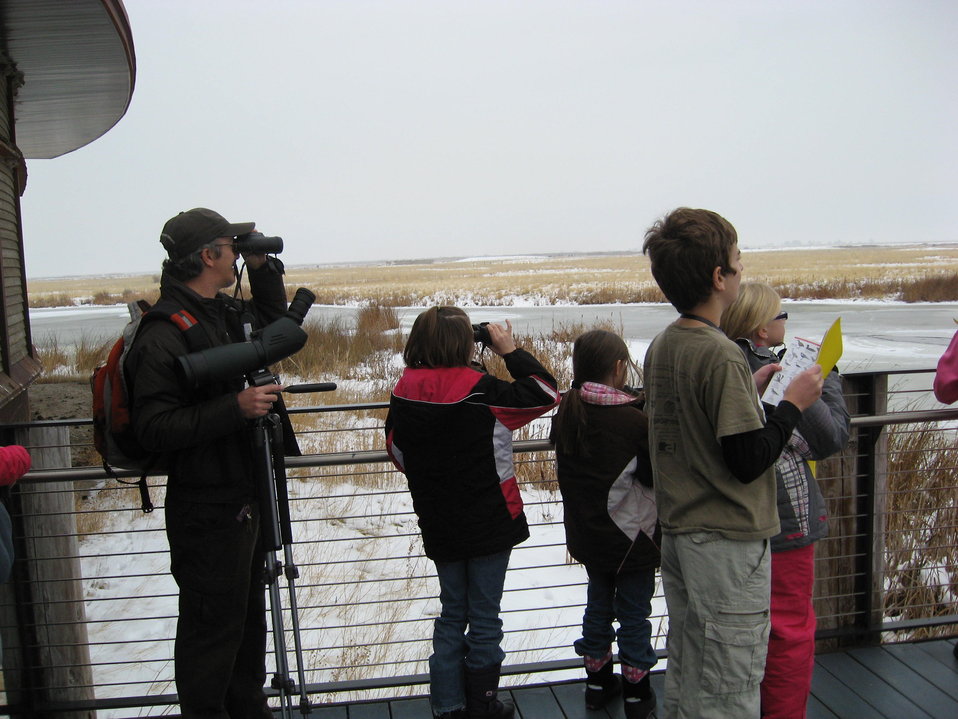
Getting a Closer Look

Visitors gather at Bear River Migratory Bird Refuge in Utah to count birds during CBC4Kids (Christmas Bird Count for Kids) in December.